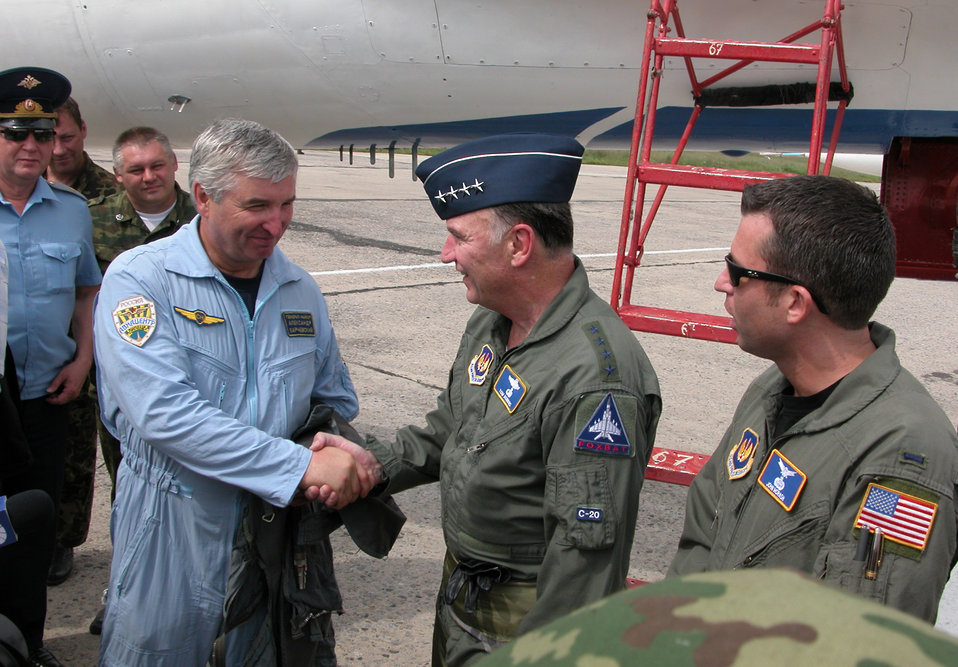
COMUSAFE boosts U.S.-Russian relations with visit

Gen. Tom Hobbins (second from right), U.S. Air Forces in Europe commander, meets Gen. Maj. Aleksandr Kharchevskiy, chief of the 4th Center for Combat Use and Flight Training, on Aug. 15. General Hobbins, who is in Russia Aug. 14 to 17 to bolster relationships and security cooperation between U.S. and Russian air forces, flew in both the SU-27 Flanker and MiG-29 Fulcrum during his visit to Lipetsk Air Base.